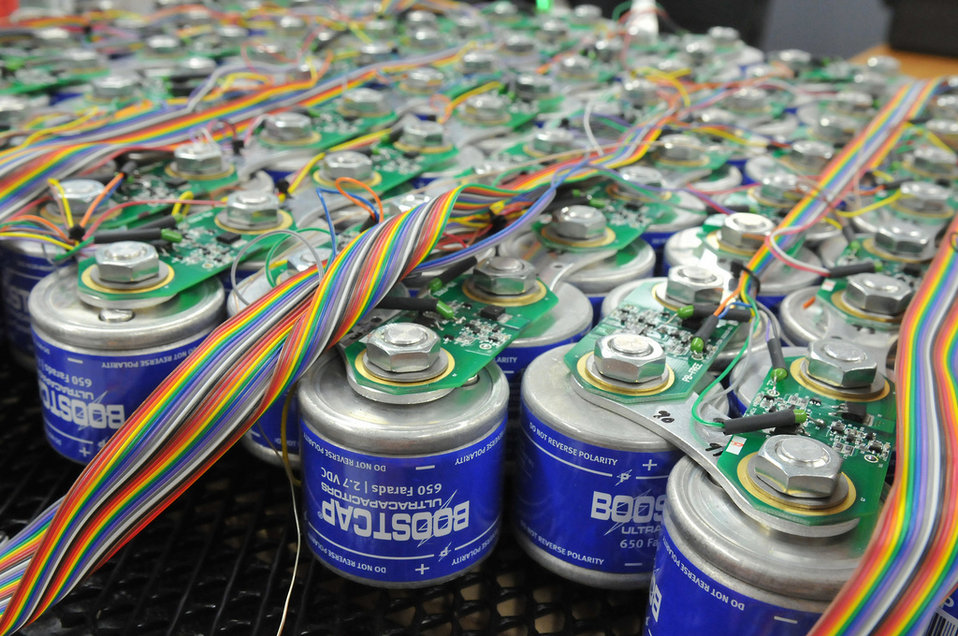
Ultracapacitors will dramatically the power of lithium-ion batteries enabling Plug-In Vehicles to travel much further on a single charge.

The lithium-ion battery technology will be a part of a new Energy Frontier Research Center (EFRC) devoted to energy storage research. The new facility will be called Center for Electrical Energy Storage (CEES) will bring together a team of 17 world-class researchers from Argonne, Northwestern University and the University of Illinois at Urbana-Champaign.